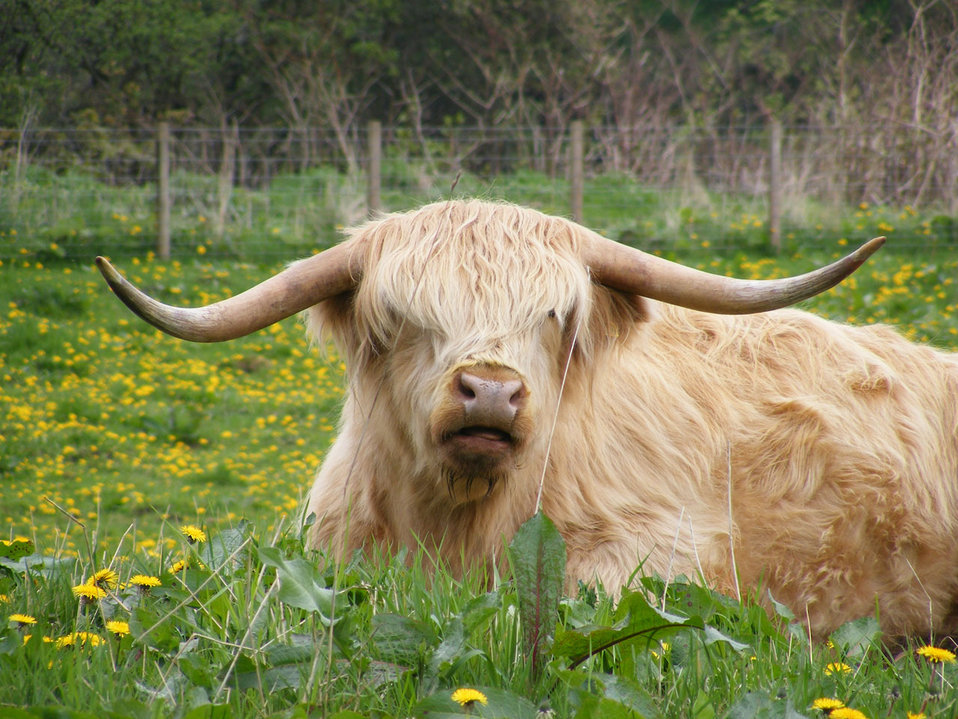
Highland cow

Another highland cow.